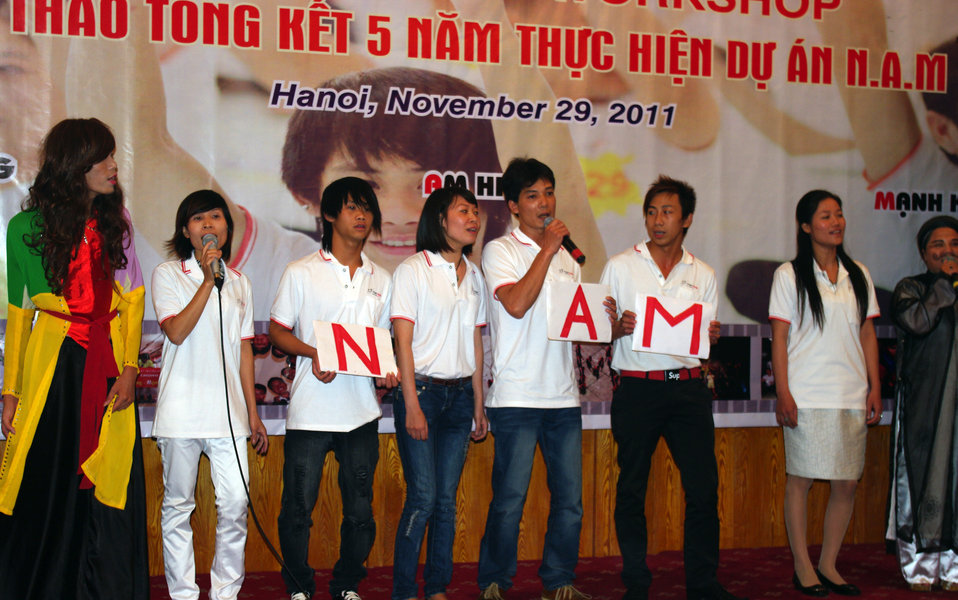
USAID Supports HIV Awareness among Street Youth and Young Men

Trainers and peer educators tell their stories on November 29, 2011, in Hanoi, Vietnam